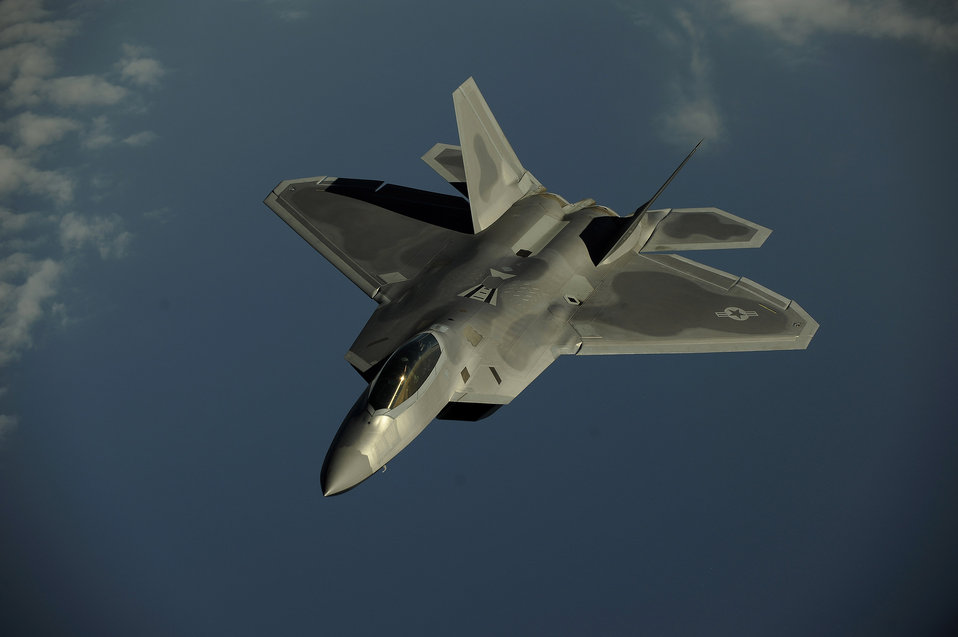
Flying high

An F-22 Raptor flies over Kadena Air Base, Japan, Jan. 23 on a routine training mission. The F-22 is deployed from the 27th Fighter Squadron at Langley Air Force Base, Va.